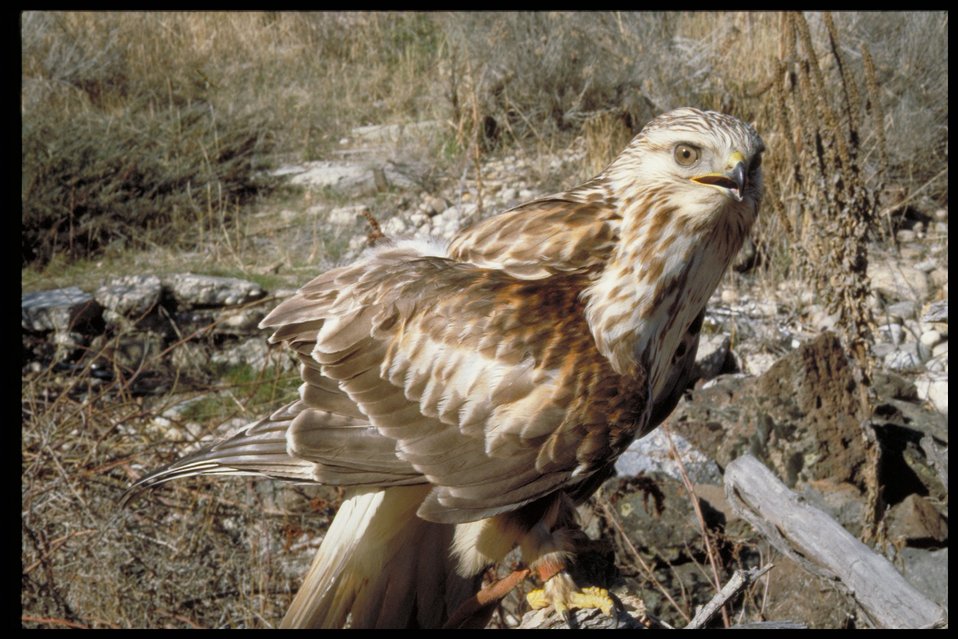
Rough-Leg Hawk Birds of Prey National Conservation Area BOP Owyhee Field Office LSRD Lower Snake River District